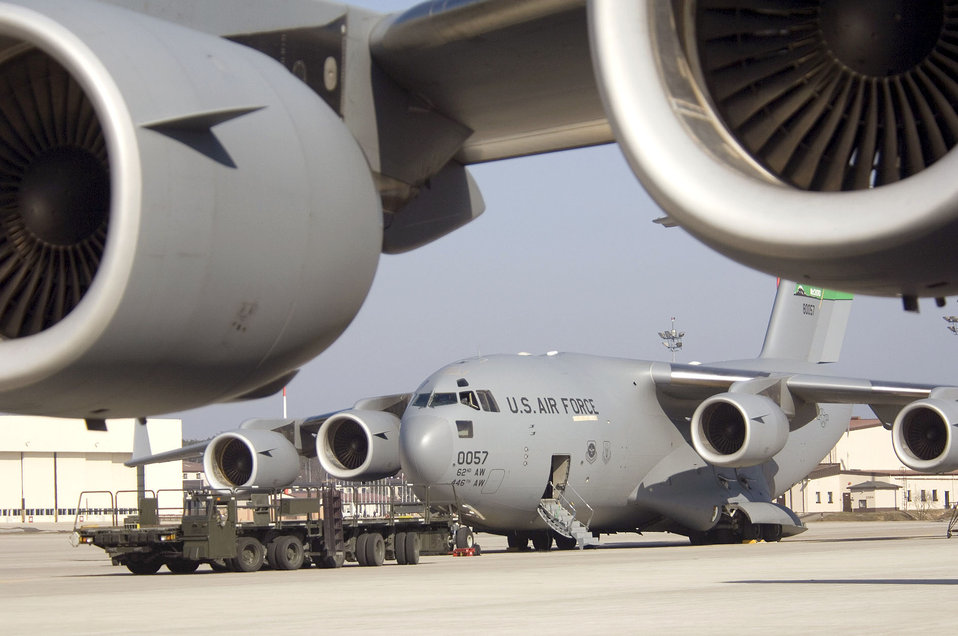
C-17s would help USAFE's air mobility business

A C-17 Globemaster III awaits loading on the parking ramp at Ramstein Air Base, Germany, on Sunday, March 19, 2006. The transport, from McChord Air Force Base, Wash., helps a fleet of Air Force cargo planes move troops and cargo from stateside bases to Iraq and Afghanistan.